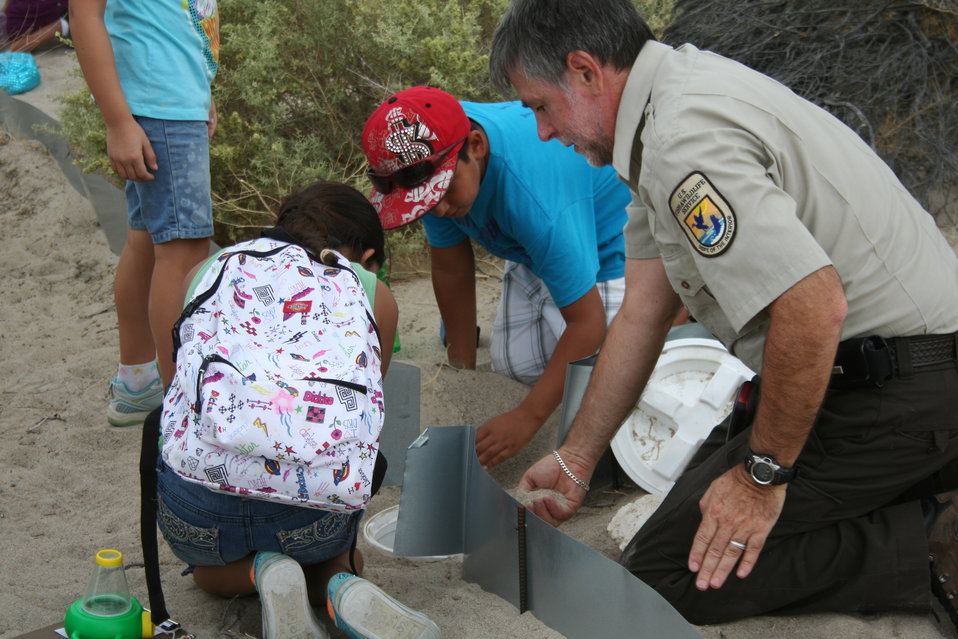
Checking the pitfall traps.

Kids help a USFWS biologist check pitfall traps in the sand dunes at Ash Meadows NWR. Cyndi Souza/USFWS photo, 9-10-2011.